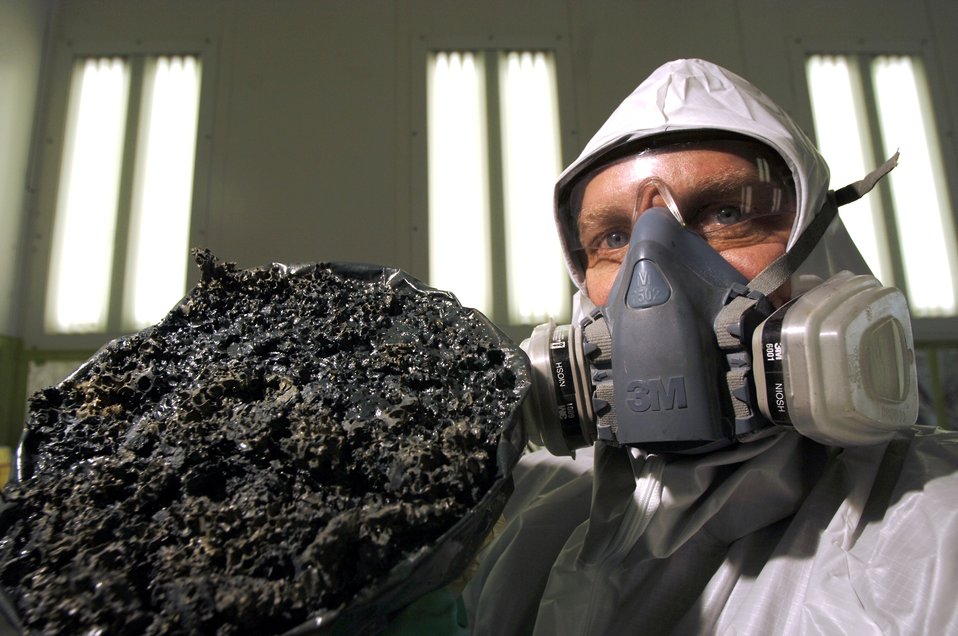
'Paintbarn' Airmen help preserve environment

Christopher Reimer holds up what used to be 5 gallons of paint thinner. With a paint gun and equipment cleaner, the thinner within the paint is reduced into a 1-pound clump of rubbery residue called volatile organic waste compound.